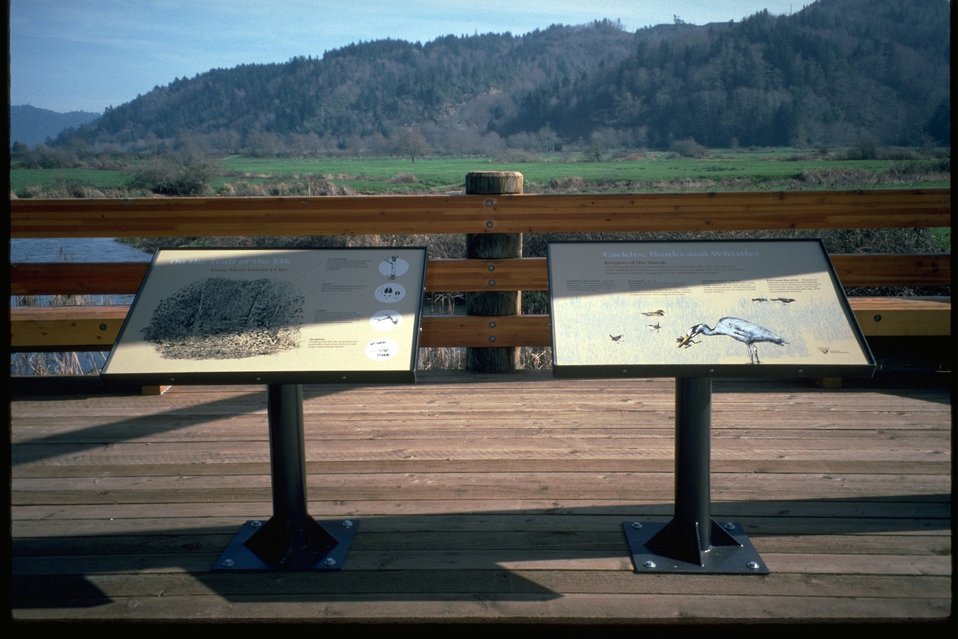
Wetland overlook viewing platform with interpretive panels.